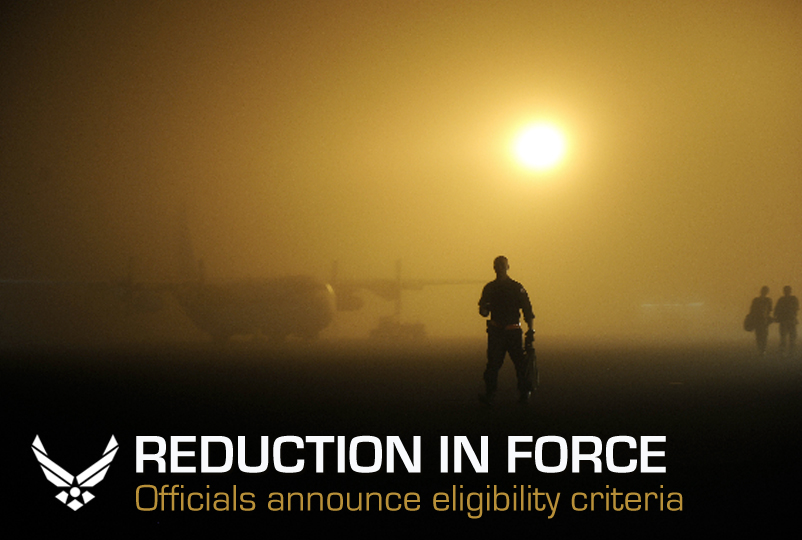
Reduction in force